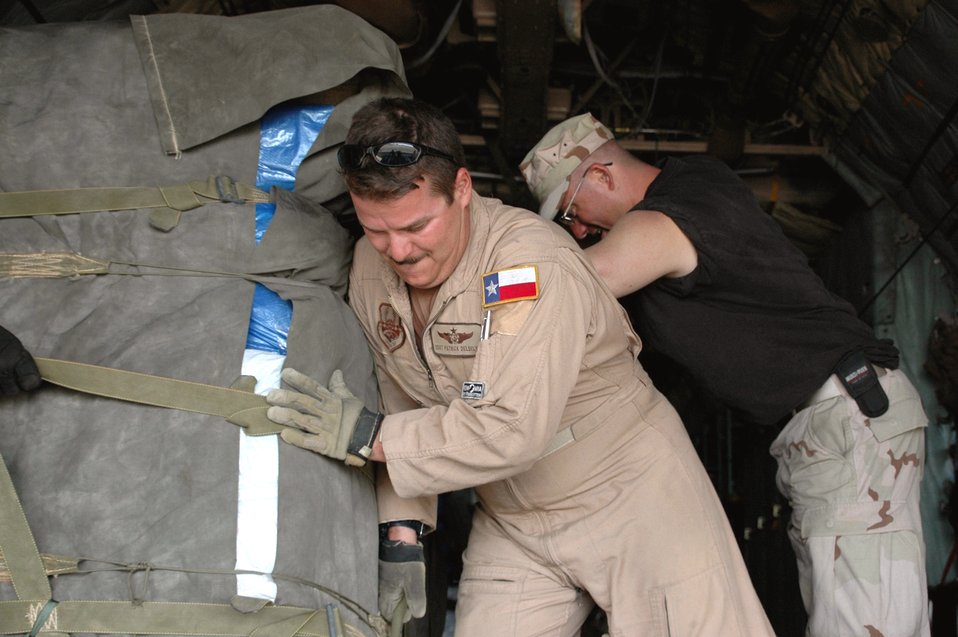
Operation Unity Knight brings relief to Kenya

Staff Sgt. Patrick Delselva uses some muscle to position a pallet filled with tarps, tents and mosquito netting on a C-130 Dec. 9. The Air Force is air-dropping supplies to flood refugees in eastern Kenya. Sergeant Delselva is a loadmaster from Dyess Air Force Base, Texas, deployed to the 746th Expeditionary Airlift Squadron. After weeks of rain in Dadaab region in Kenya, camps housing about 160,000 Somali refugees who fled their country 14 years ago following an uprising were damaged and many crops were destoyed. The Combined Joint Task Force - Horn of Africa military officials monitoring the developments began Operation Unity Knight and sent an Air Force C-130 assigned to the 379th Air Expeditionary Wing based in Southwest Asia because the roads in the area were impassable.